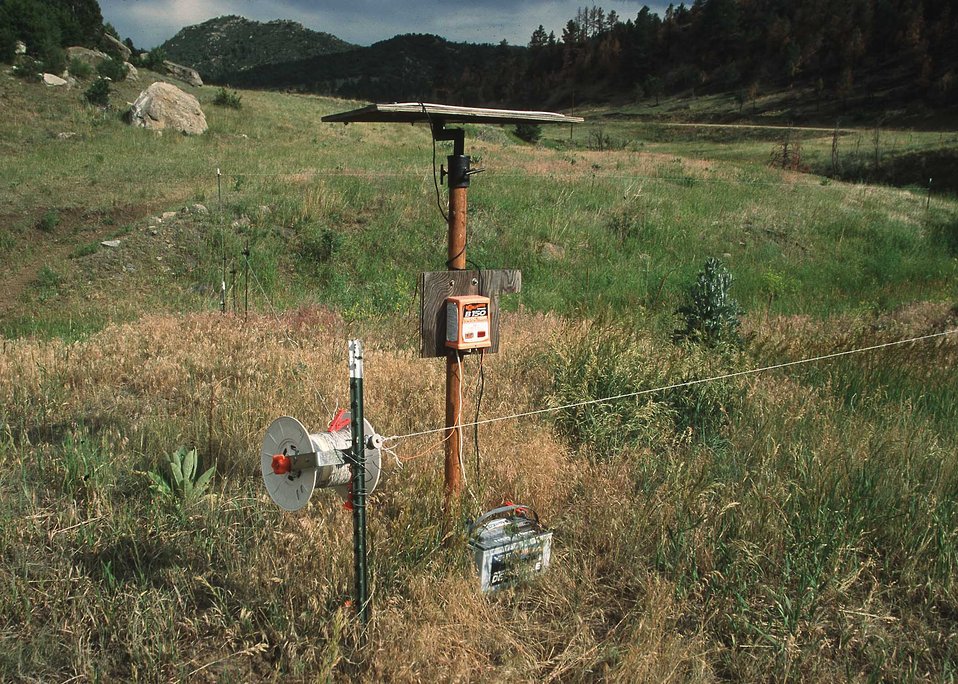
Electric Fence Energizer.